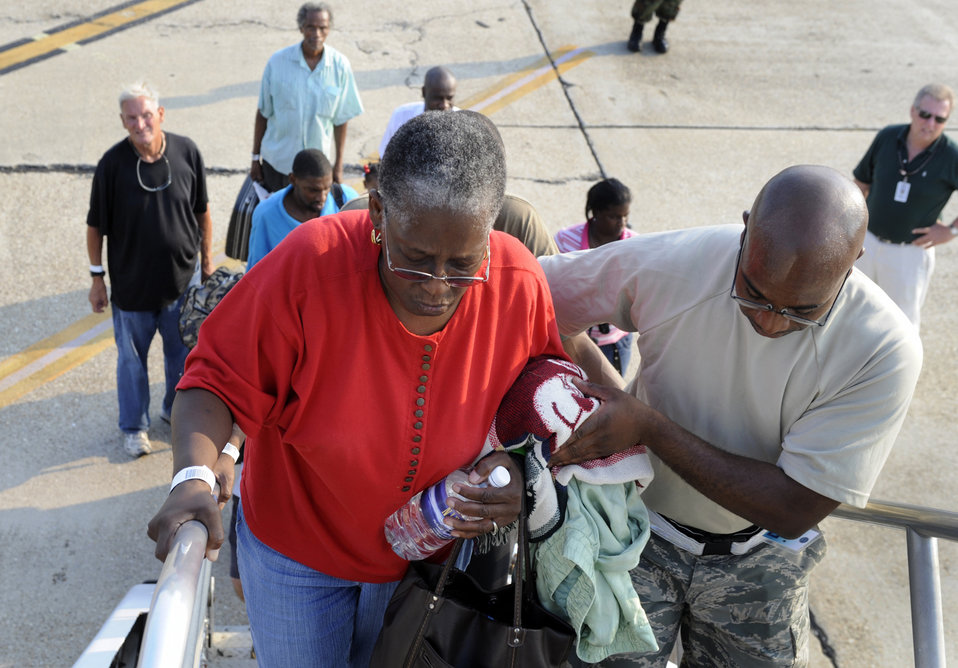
Airmen there as hurricane evacuation begins

Tech. Sgt. Cedric Scott assists an evacuee leaving before Hurricane Gustav hits the Gulf Coast as she boards a flight at the Louis Armstrong International Airport in New Orleans Aug. 30. Officials with the Federal Emergency Management Agency and Department of Defense have chartered aircraft to transport evacuees to destinations safely outside the path of the hurricane. Sergeant Scott is from the 615th Contingency Response Wing at Travis Air Force Base, Calif.